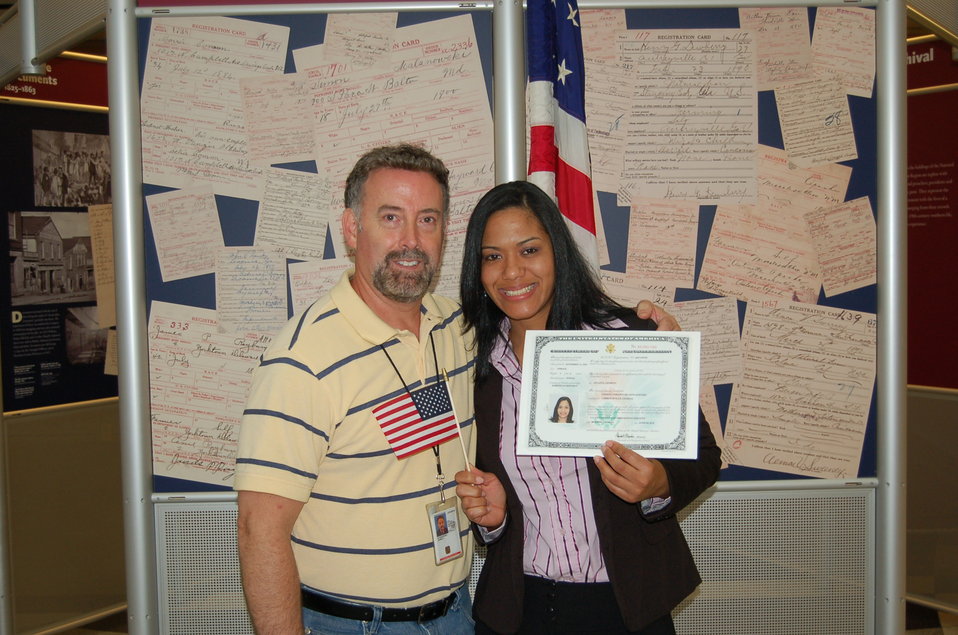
New Citizens